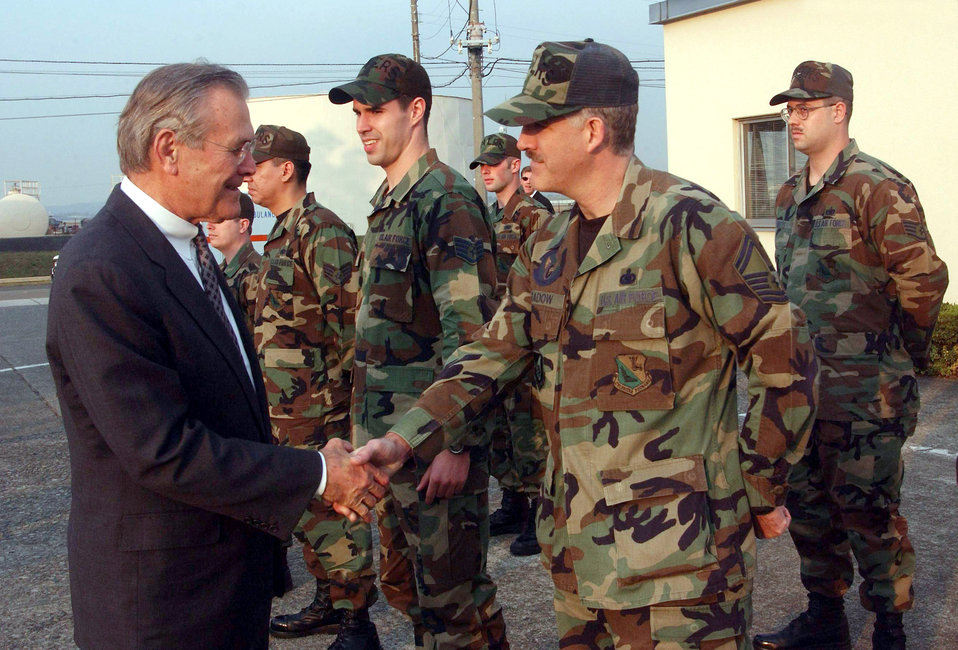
Meet 'n greet

YOKOTA AIR BASE, Japan -- Secretary of Defense Donald H. Rumsfeld shakes hand with Senior Master Sgt. Michael Bradow during his visit here Nov. 15. Rumsfeld met with airmen during a two-day visit in Japan which included stops at military bases in Tokyo and Okinawa. Bradow is assigned to the 374th Logistics Readiness Squadron.